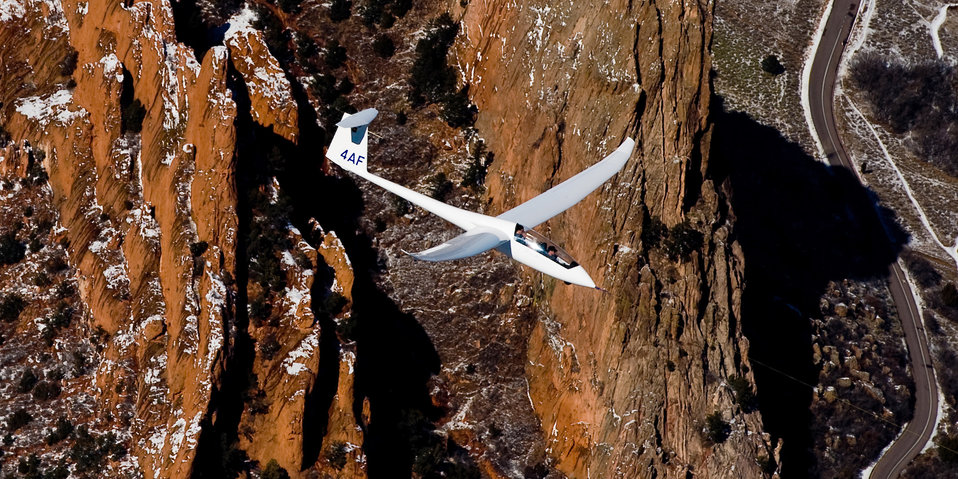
Glider program

Air Force Academy cadets fly in a TG-15A glider Feb. 23, 2010, above Colorado Springs, Colo. Cadets typically fly 10 to 15 training sorties in the TG-15A and undergo 50-hour cross-country upgrade training before they can fly cross-country solo in the TG-15B.